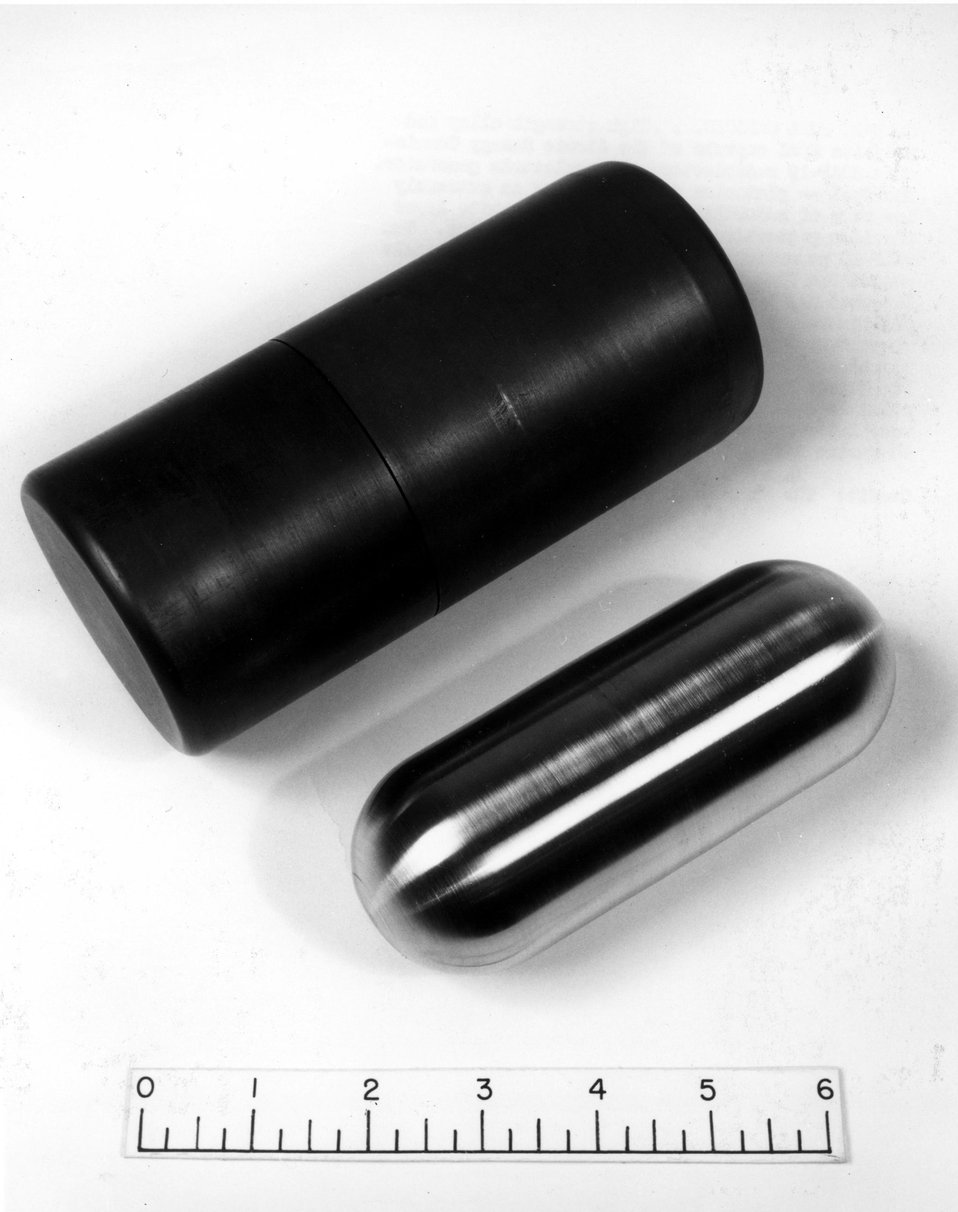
SNAP-19 fuel capsule... High strength alloy and graphite fuel capsule of the Atomic Energy Commission SNAP-19 radioisotope thermometric generator.